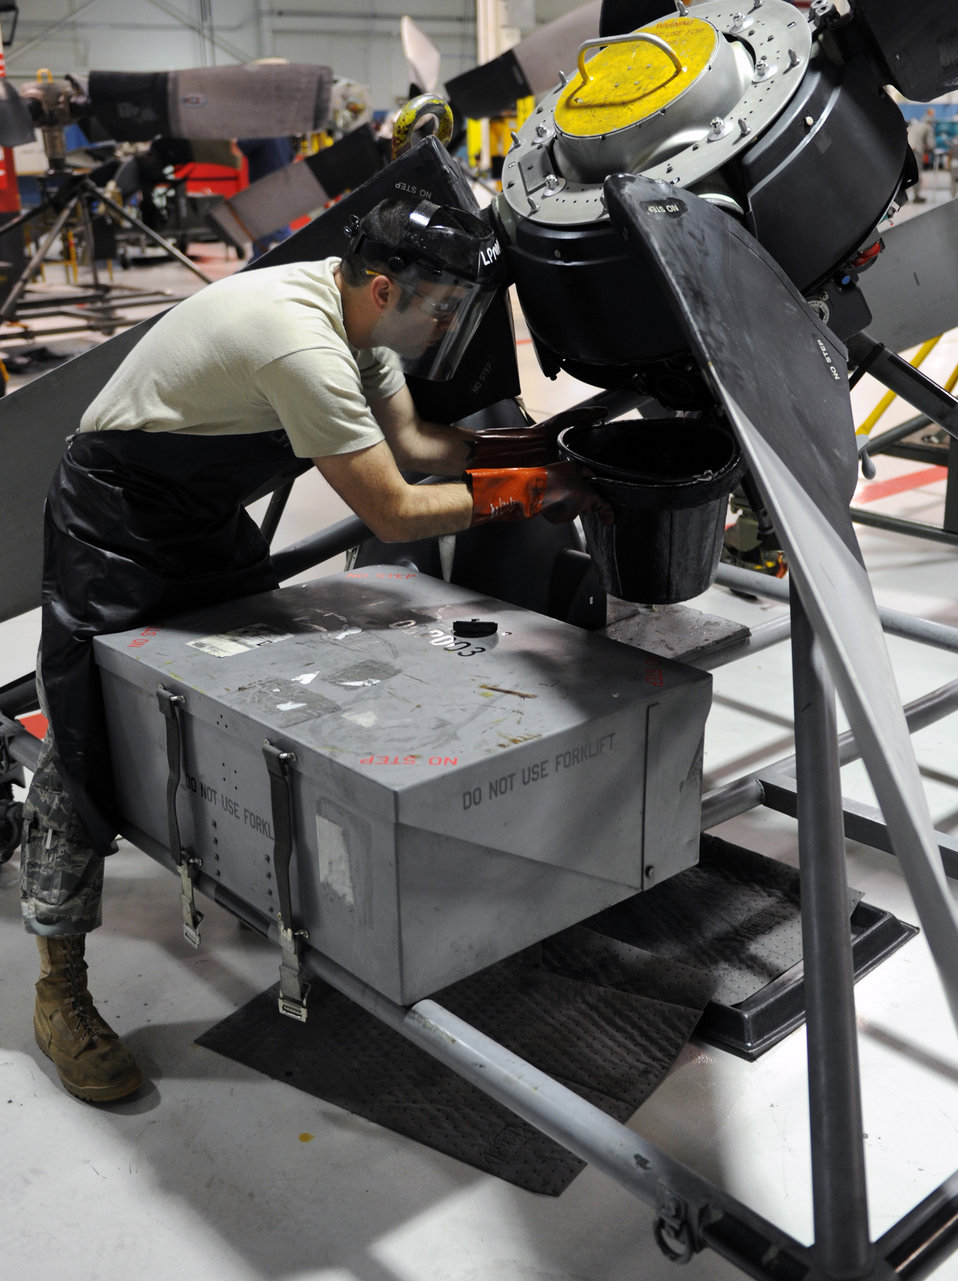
C-130 engine maintenance

Senior Airman William McTavish drains fluid from a propeller control pump May 31, 2011, at Little Rock Air Force Base, Ark. Draining engine fluid is one step in the final inspection of a C-130 Hercules propeller. Airman McTavish is an aerospace propulsion journeyman assigned to the 19th Component Maintenance Squadron.